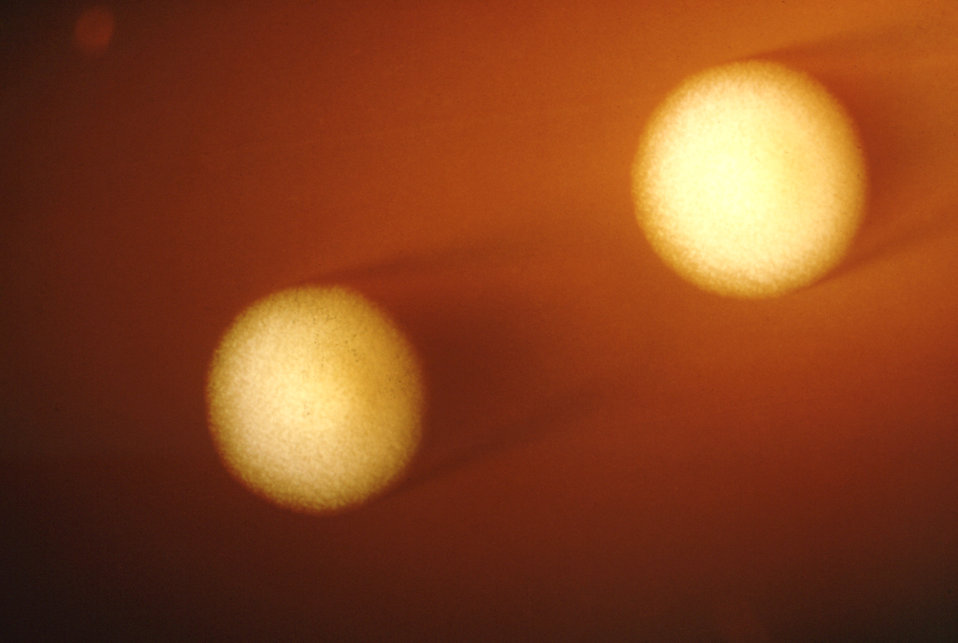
These are Clostridium botulinum Type A colonies, Strain 2, grown on a 48hr blood agar plate.